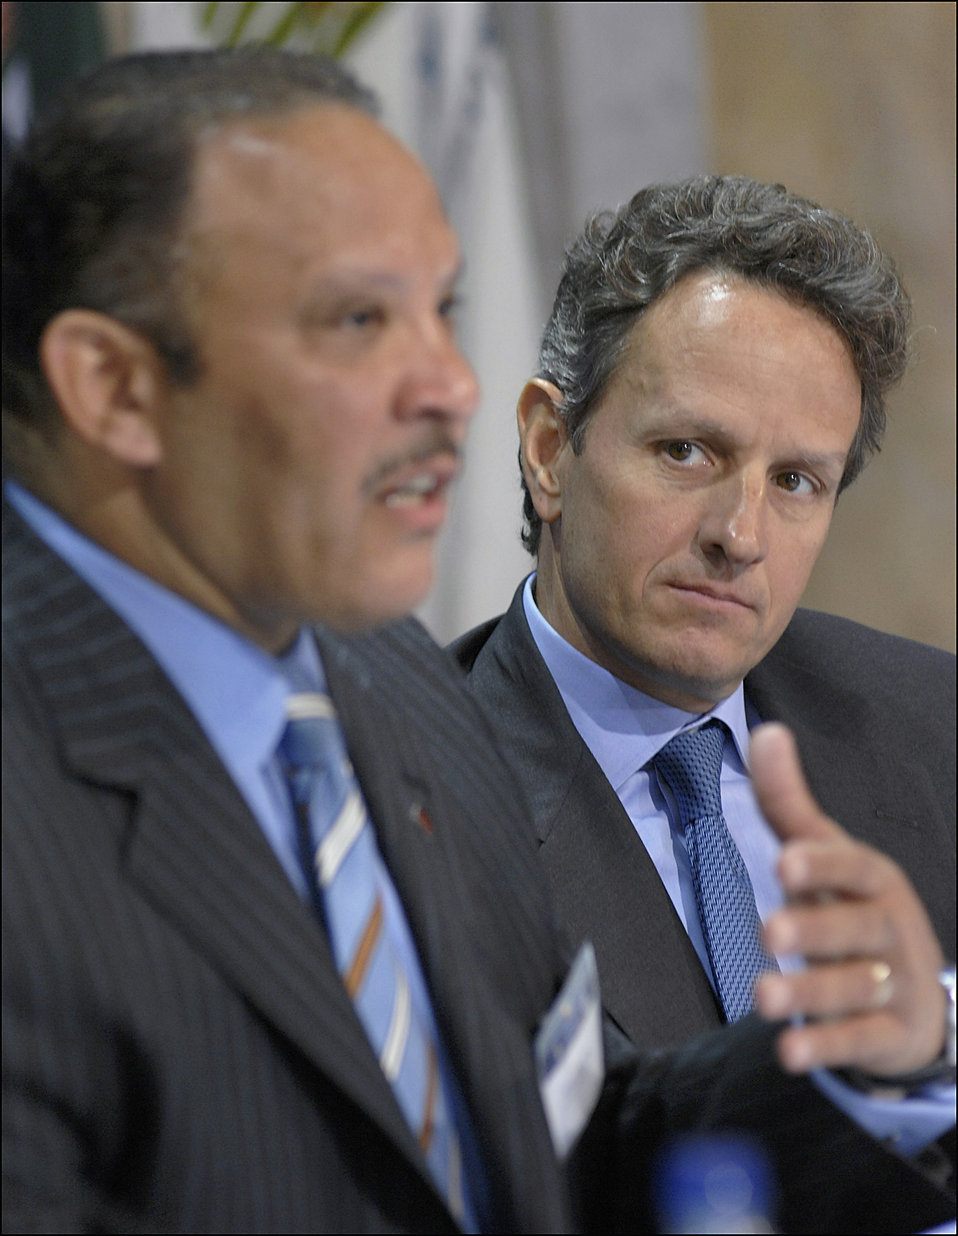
Conference on the Future of Housing Finance, 08/17/2010

Secretary Geithner listening to Marc Morial of the National Urban League during a panel on Housing Finance Reform and Broader Financial Markets at the Conference on the Future of Housing Finance held at the Treasury Department.